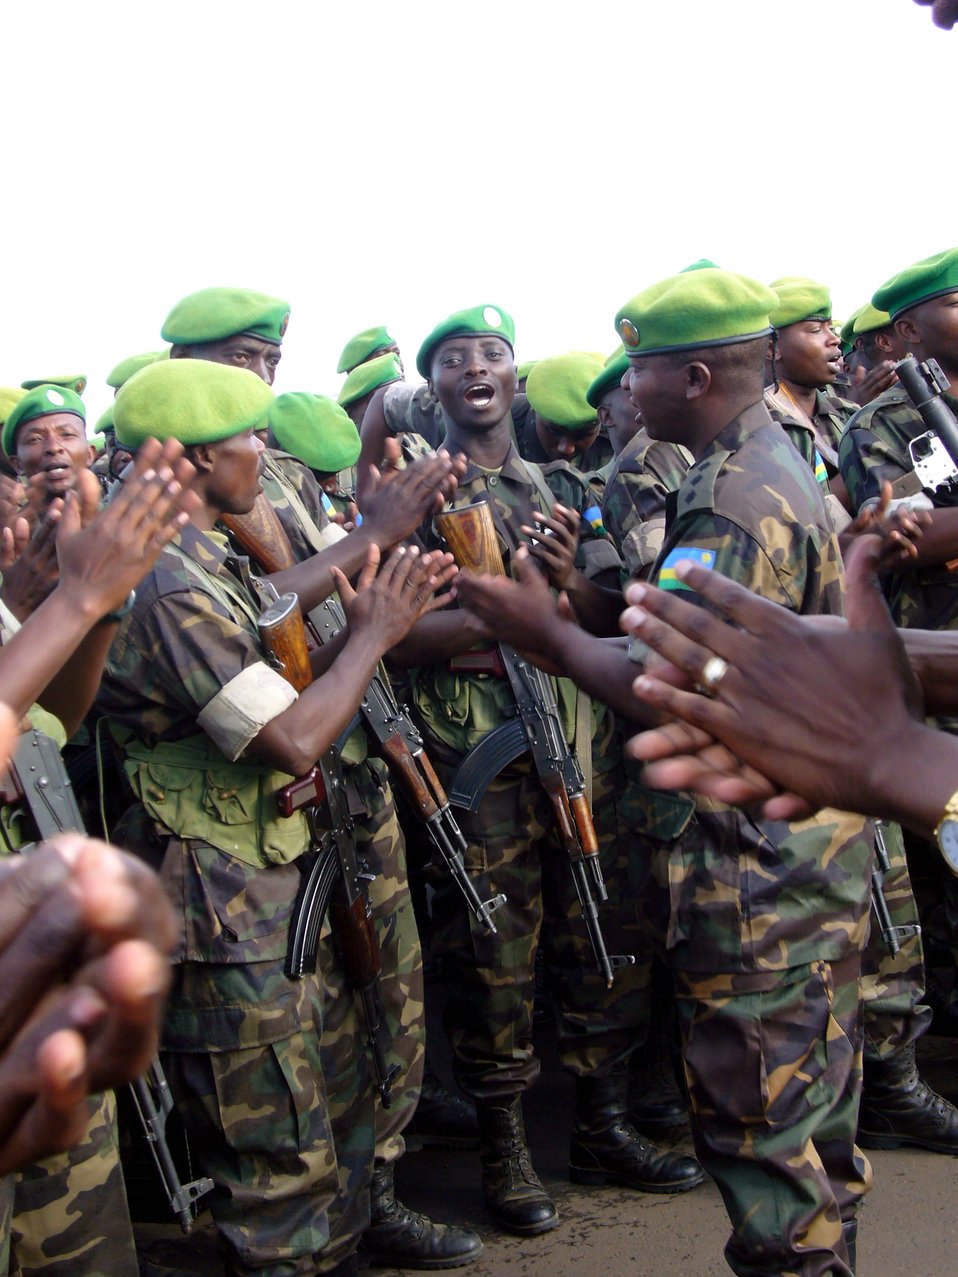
Air Force assists in Darfur troop movement

Rwandan soldiers celebrate with a traditional song after returning from their eight-month deployment in Darfur Oct. 20 in Kigali, Rwanda. Airmen from Ramstein Air Base, Germany, and Charleston Air Force Base, S.C., are providing airlift support to the African Union effort in Darfur.